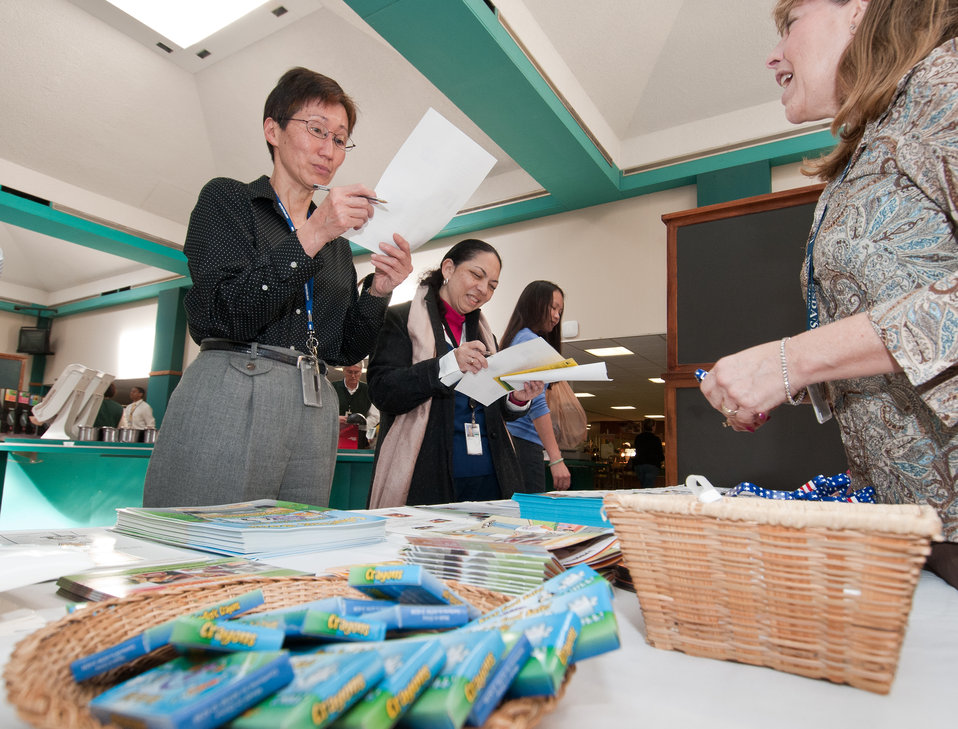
Agricultural Marketing Service, food technologist Jane Ho (left), answers a quiz about food safety; while Food Safety & Inspection Service, Technical Information Specialist Eileen Dykes (right) encourages others to take the quiz at the Department of Agriculture celebration of the introduction of the Dietary Guidelines for Americans 2010, an informational event in the Whitten Café in Washington, D.C., on Wednesday, March 2, 2011. For answering the questions correctly, she won a patriotic pen and a refrigerator thermometer. The event had representatives from Agricultural Marketing Service (AMS); Agricultural Research Service (ARS - including Food and Nutrition Information Center - FNIC, and Food Safety Information Center – FSIC); Economic Research Service (ERS); Food, Nutrition & Consumer Services (FNCS); Food Safety and Inspection Service (FSIS); National Institute of Food and Agriculture (NIFA); USDA Office of Operations (Departmental Management); Food and Drug Administration (FDA); and Sodexo.